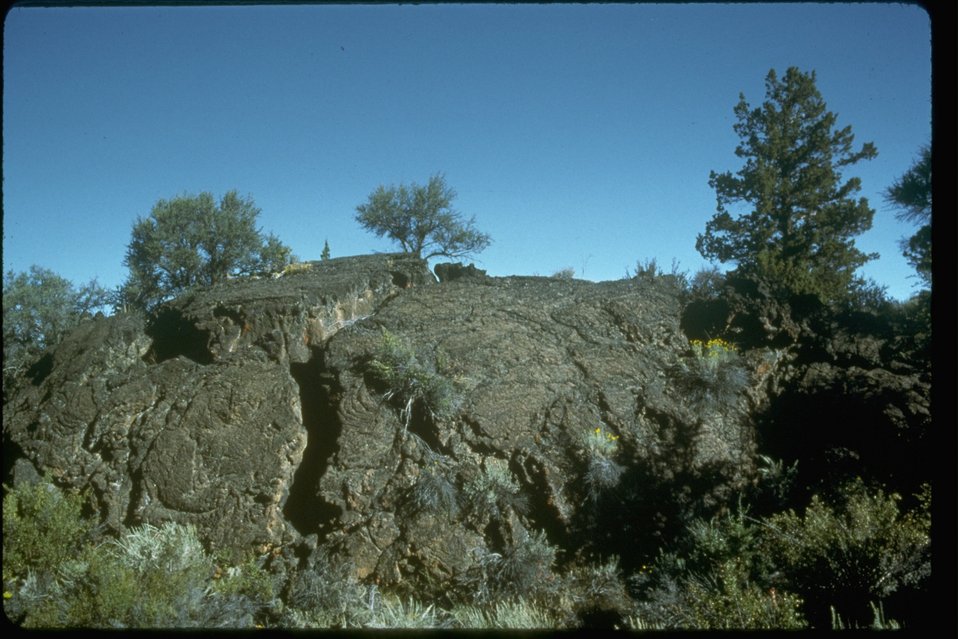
Lava dome with fissure in the Squaw Ridge Wilderness Study Area. OR 1-3.